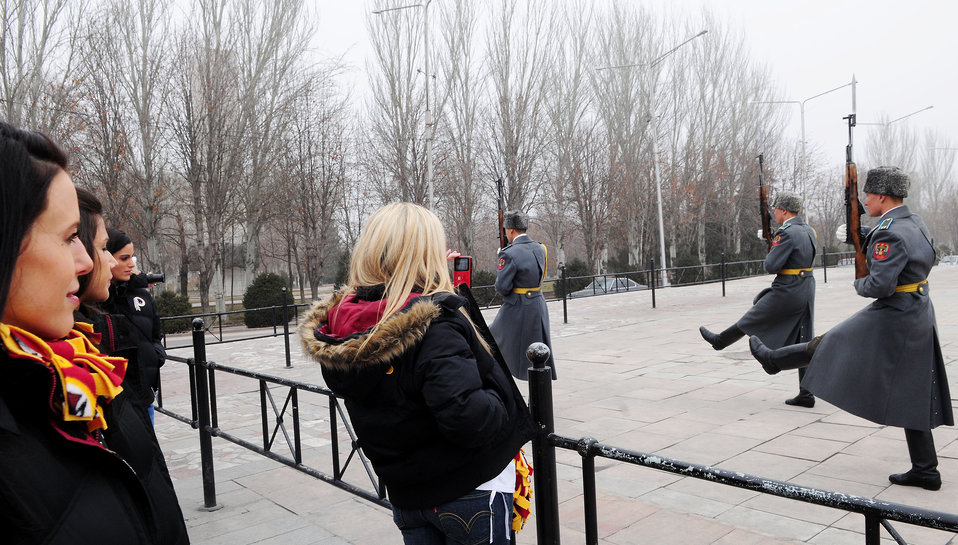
Cheers to Bishkek

The Washington Redskins cheerleaders watch the changing of the guard during a history and cultural tour Jan. 27, 2010, of downtown Bishkek, Kyrgyzstan. The Transit Center at Manas in Kyrgyztan is their first stop in a two-week long tour where they will perform for Airmen, Soldiers, Sailors and Marines deployed overseas.